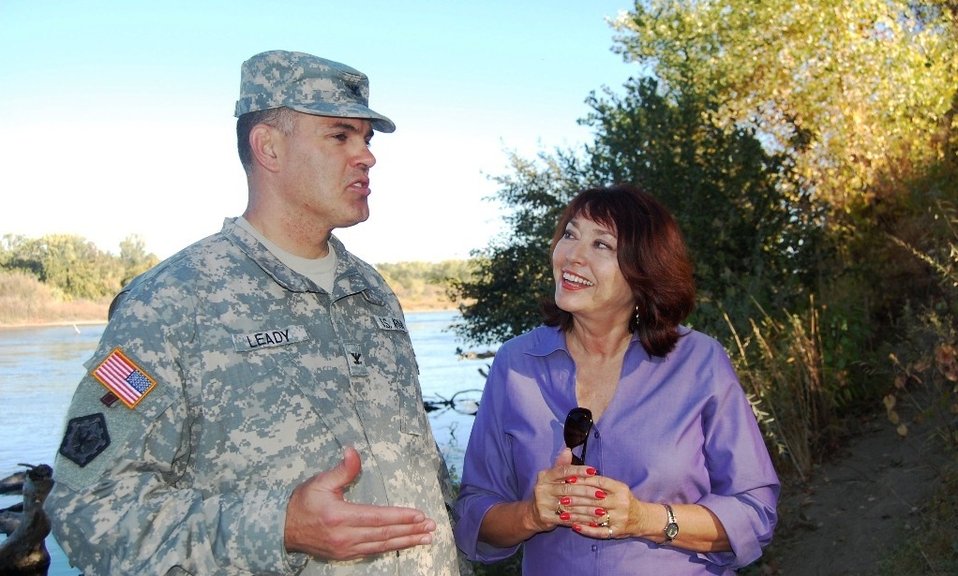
Northern California water education tour

U.S. Army Corps of Engineers Sacramento District commander Col. Bill Leady speaks with Rita Schmidt Sudman, Executive Director of the Water Education Foundation, during the foundation’s Northern California Tour Oct. 17, 2012. Leady and other speakers discussed innovative programs for flood management, groundwater management and salmon restoration while visiting Oroville and Shasta dams, Red Bluff Diversion Dam, the Feather River Fish Hatchery, Clear Creek Restoration Project and Glenn-Colusa Irrigation District’s fish screen and Delevan Wildlife Refuge.